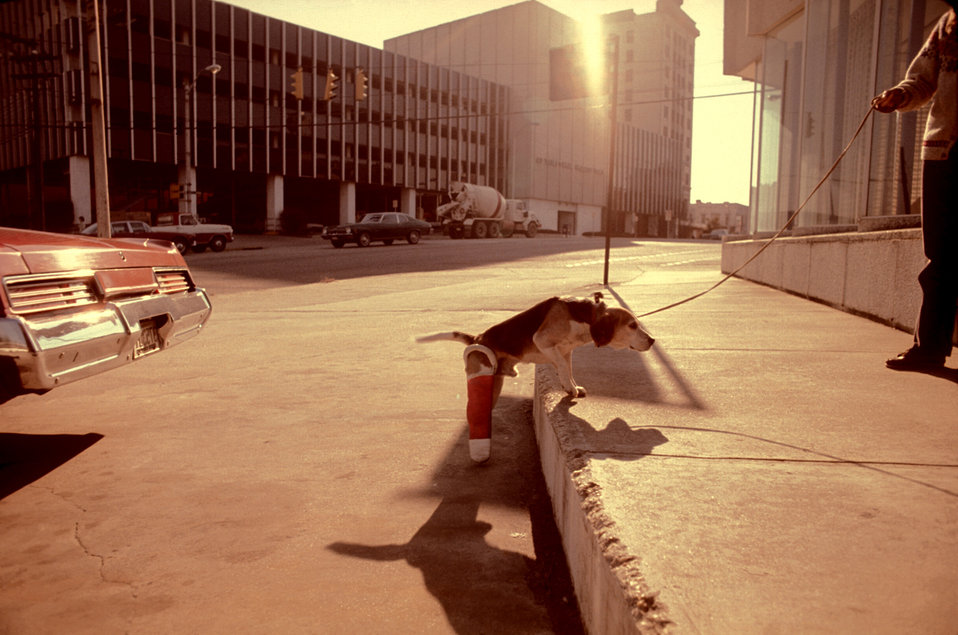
In this 1978 image, a functionally-impaired beagle was confronted by a steep roadside curb, which it was attempting to climb. With a broken right rear leg that had been set in a cast, this photograph illustrated how diverse a user population need be taken into account when designing public walkways. Human beings of all types and in all states of mobility, as well as animals, must be considered in order for a functional walkway to be considered universal in its usability and functionality. Note the similar situations involving the same dog, and its interaction with the steeper steps in PHIL 9058, and shallower steps in PHIL 9059.